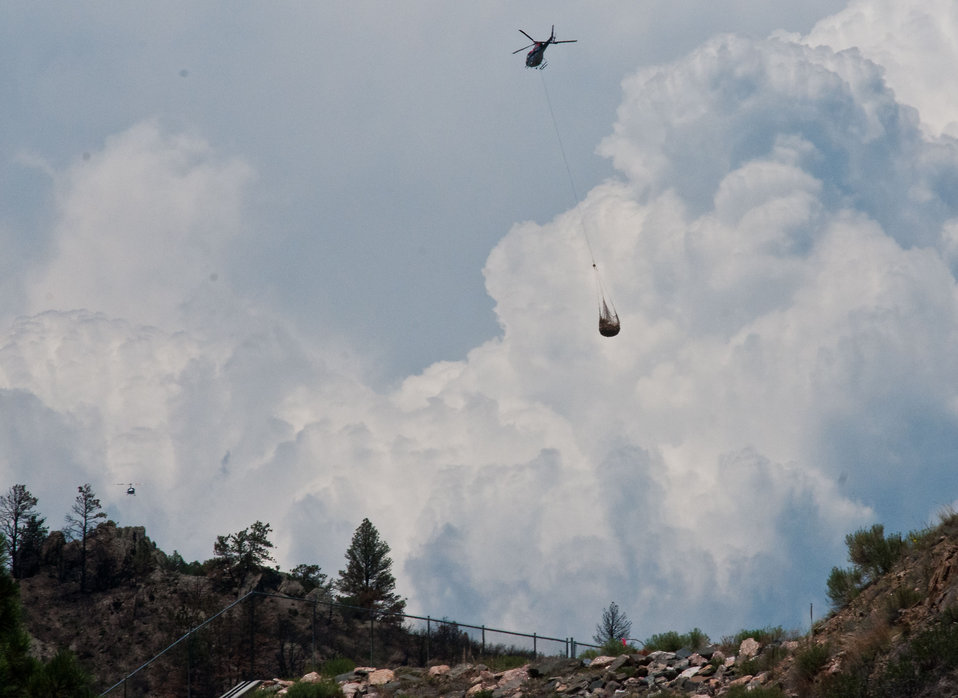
Helicopters come and go in the continuing aerial application of straw to mitigate soil and ash runoff from the mountainous terrain leading to Seaman Reservoir, drinking water resource for the City of Greeley, on Friday, July 20, 2012, near Fort Collins, Colorado. A Bell UH-1H (2-blade rotor) and A-Star Model B (3-blade rotor) take turns picking up loads of straw from the landing zone at the foot of the reservoir spillway. The 100-150- cables hold and release loads of certified straw weighing 1,400 – 2,000 pounds. Forest service lands received straw, while private and other lands receive a seed mix and straw to promote ground cover plant growth on ash-covered lands. In total, 1,800 tons of straw will be applied during the 14-day operation. One quarter of the cost was paid by the City of Greeley and the U.S. Department of Agriculture funded the remainder. The Hewlett Gulch Fire was started by a camper’s alcohol stove, on May 14, at the saddle of a picturesque mountain ridge along the Hewlett Gulch Trail of Poudre Canyon, in the Roosevelt National Forest, 60 miles north of Denver. At it’s more than 400 firefighters were battling fires being pushed by 50 mph winds that helped blacken over 12-square-miles of dry ground cover, brush and trees. Many of the trees were already dead and tinder dry from beetle-kill. The water in the reservoir remains clean and clear, while downstream water flow has gone from famous Colorado clear water to nearly black flows of water heavily laden with ash, silt, and burnt debris that recent thunderstorms have already washed down from the mountainsides.